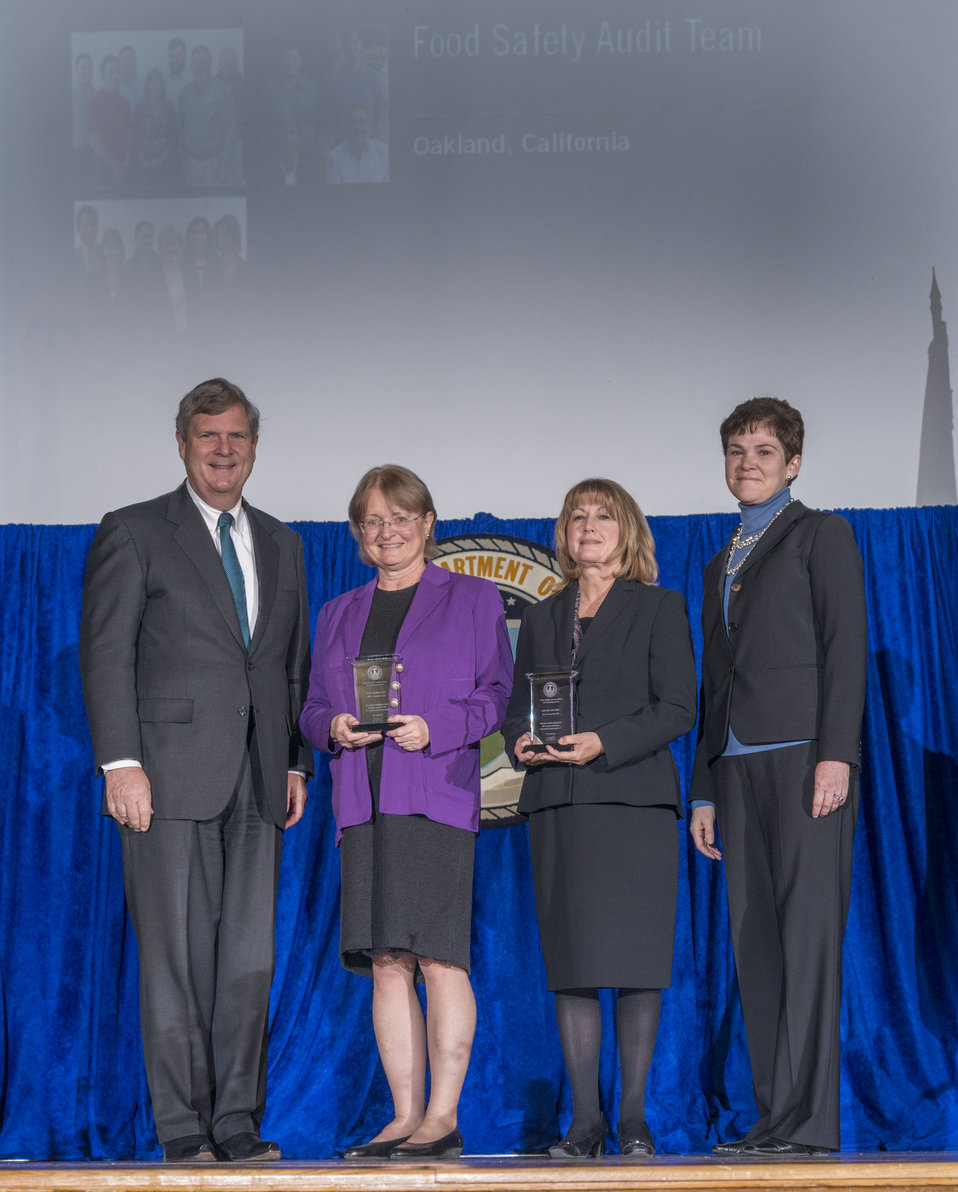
Agriculture Secretary Tom Vilsack and Agriculture Deputy Secretary Krysta Harden present the Secretary’s Honor Award to Food Safety Audit Team, Office of Inspector General, in Oakland, CA Group leaders Barbara B. Gladfelter and Ronda F. Price for outstanding audit work in identifying weaknesses in the Food Safety and Inspection Services’ inspection process, resulting in significant improvement to the Nation's food supply at the 2013 Secretary's Honor Awards in the Jefferson Auditorium at the U.S. Department of Agriculture (USDA) in Washington, D.C. on Wednesday, Dec. 11, 2013.